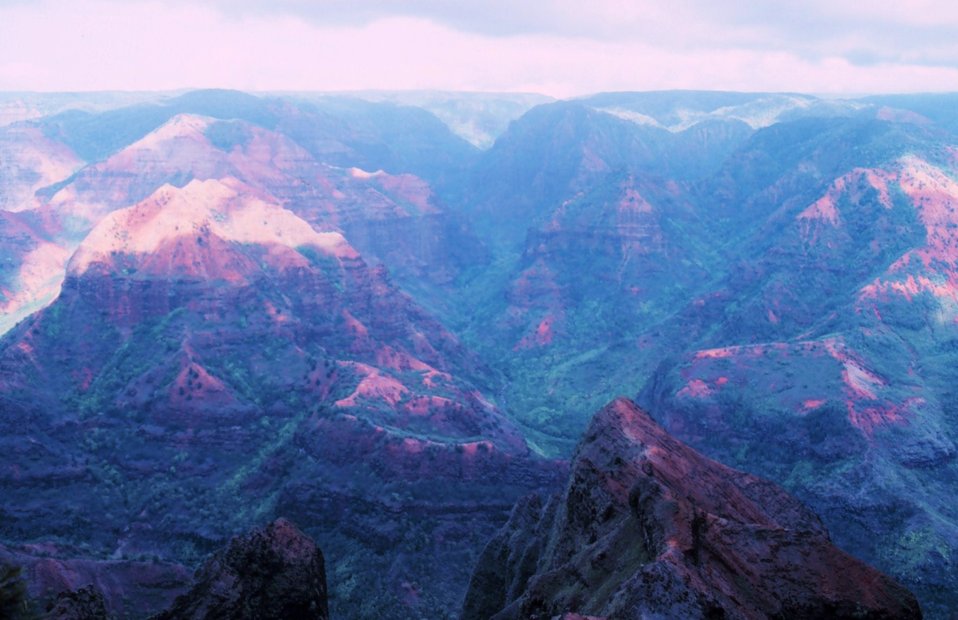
Waimea Canyon - the Grand Canyon of the Pacific